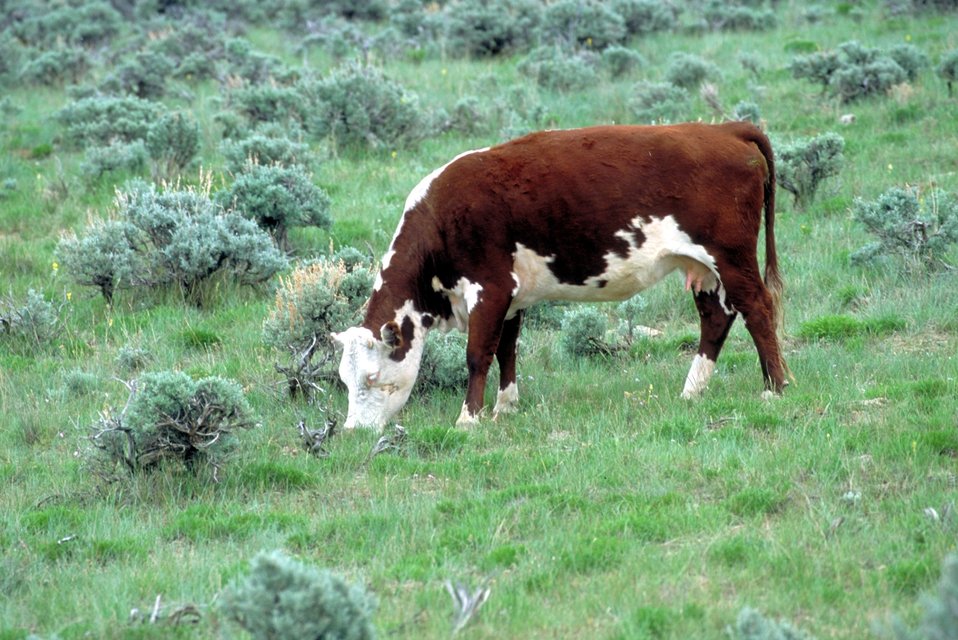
Livestock grazing on BLM lands near Price, Utah.